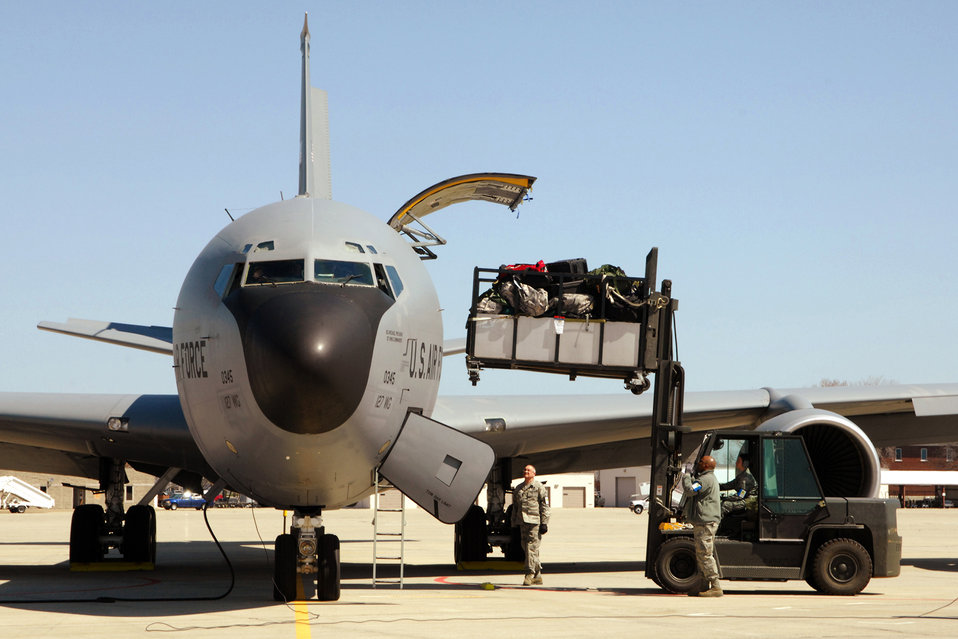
Airmen prepare KC-135

Cargo handlers load a pallet of equipment into a KC-135 Stratotanker April 14, 2011, at Selfridge Air National Guard Base, Mich.